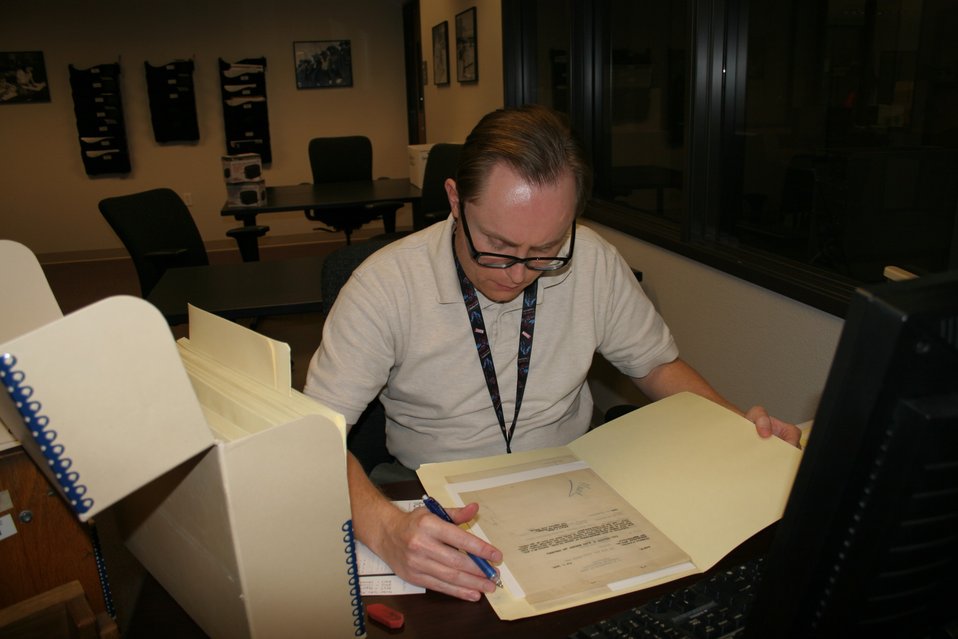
Archivst Matt Law reviews Chinese Exclusion Act Files.; Location: National Archives at Riverside, Perris, CA